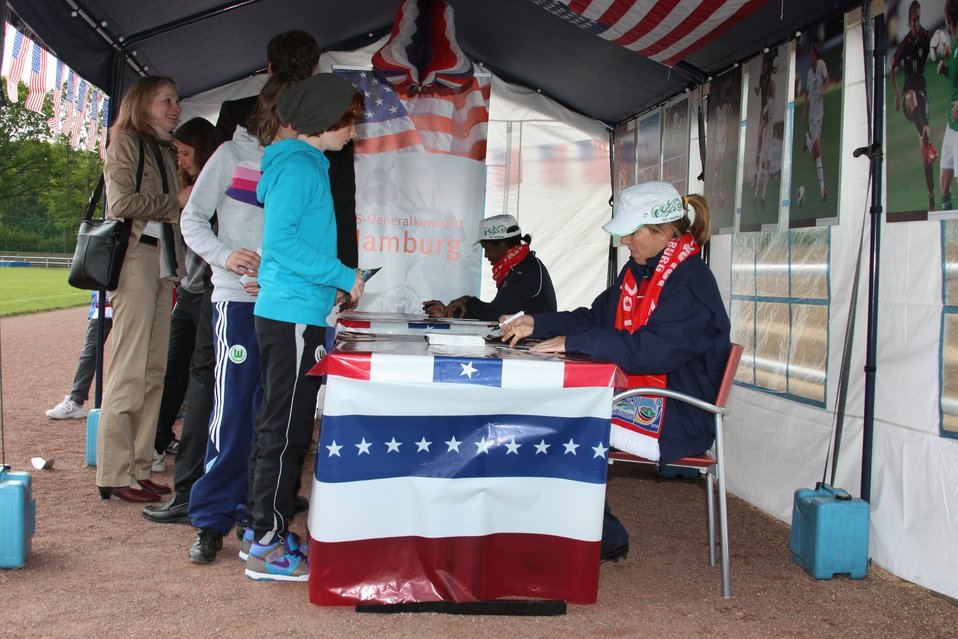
U.S. Sports Envoys Briana Scurry and Amanda Cromwell Sign Autographs

U.S. Sports Envoys, Briana Scurry and Amanda Cromwell, former players on the U.S. Women’s National Soccer Team, sign autographs at the Consulate General Hamburg's pavilion in Wolfsburg, Germany, on July 6, 2011.